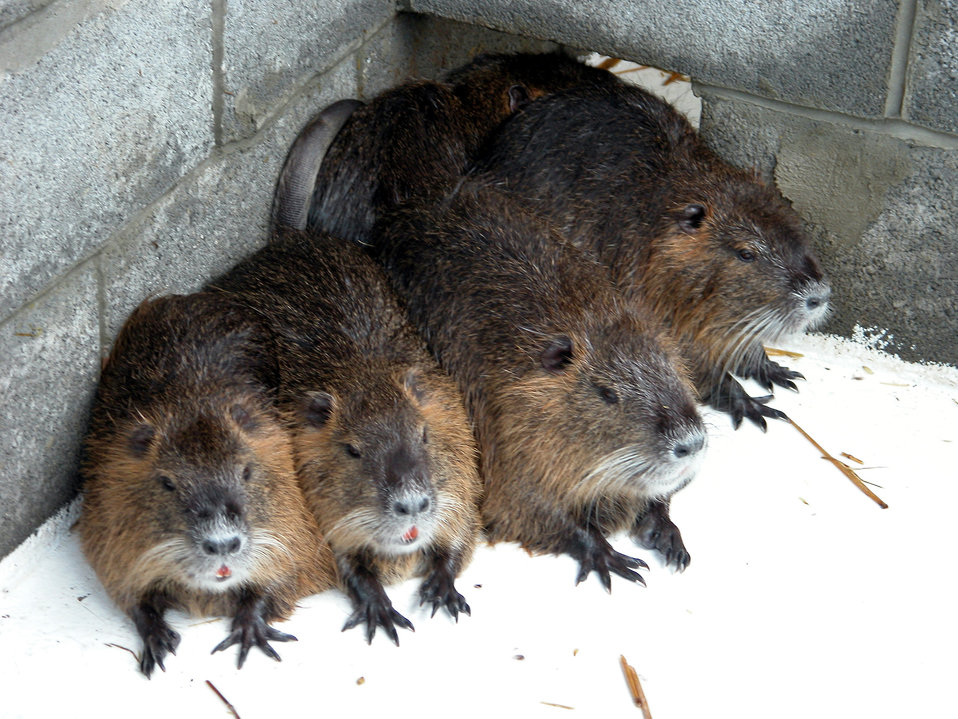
nutria

Invasive rodents called nutria are held captive at Blackwater National Wildlife Refuge in Maryland, where the animals have destroyed thousands of acres of salt marsh.